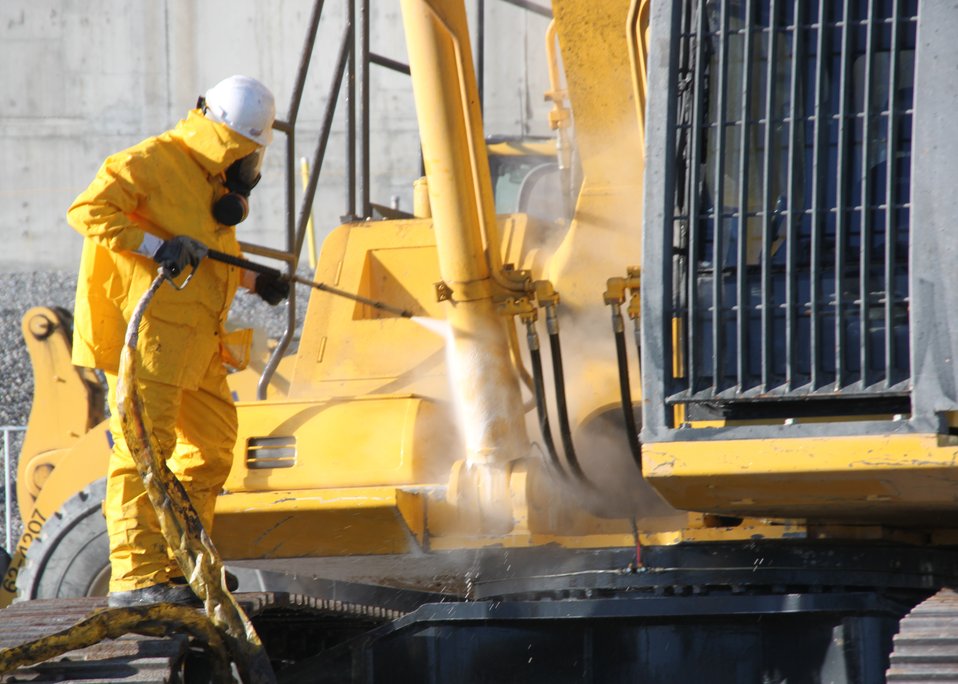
Recovery Act Funds Accelerate Cleanup, Reduce Footprint at Hanford Site

The Recovery Act has left its mark throughout the 586-square-mile Hanford Site, building a skilled workforce and accelerating the removal of contaminated waste and buildings left behind from decades of plutonium production.